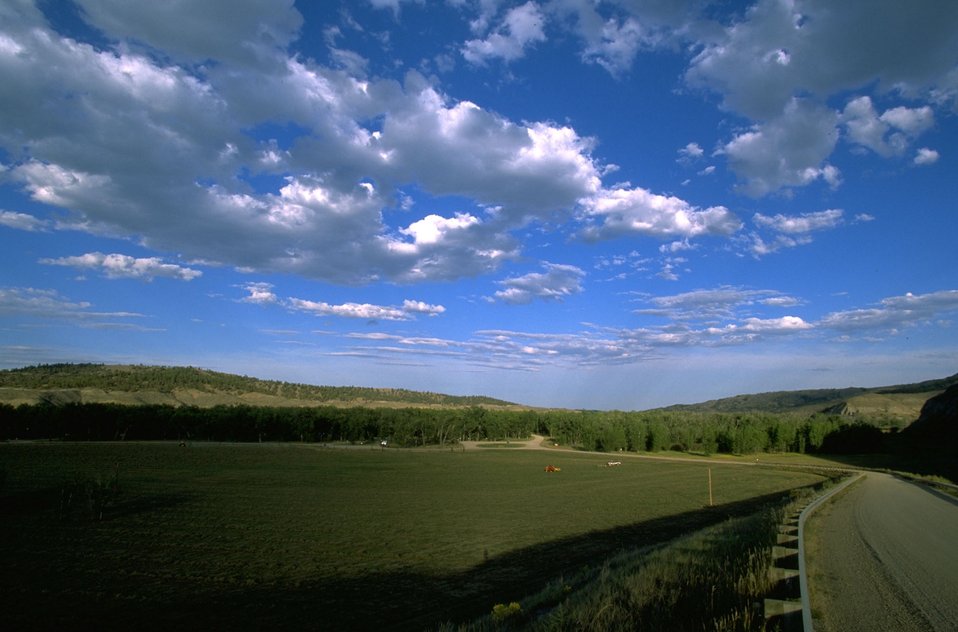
Kipp Recreation Area